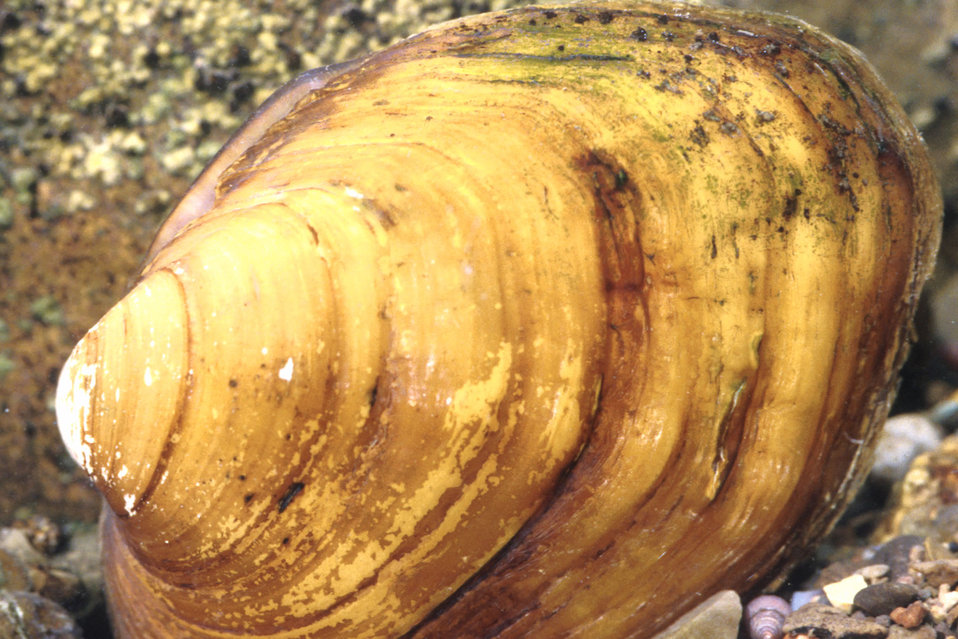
Sheepnose mussel

The sheepnose mussel was recently listed as endangered by the U.S. Fish and Wildlife Service.